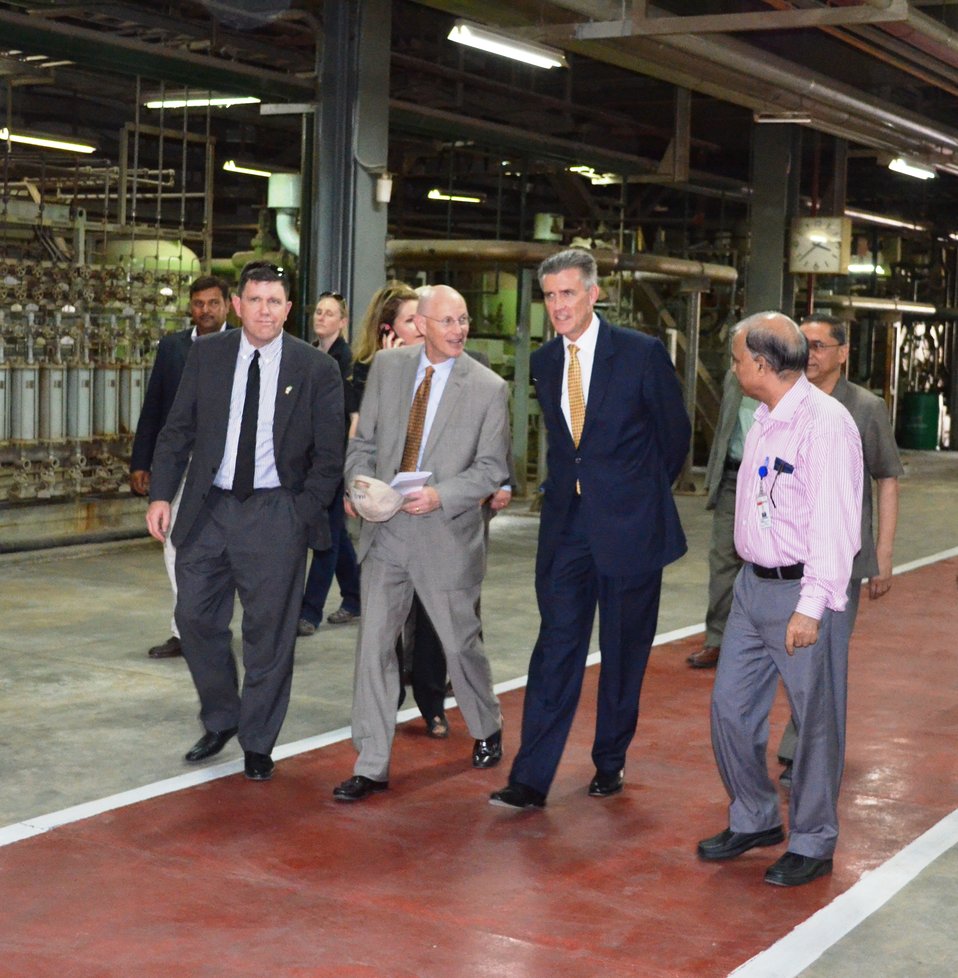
Ambassador Richard Olson taking a tour of the power plant. USAID Mission Director Gregory Gottlieb and US Consul General Karachi Michael Dodman were also present at the event.